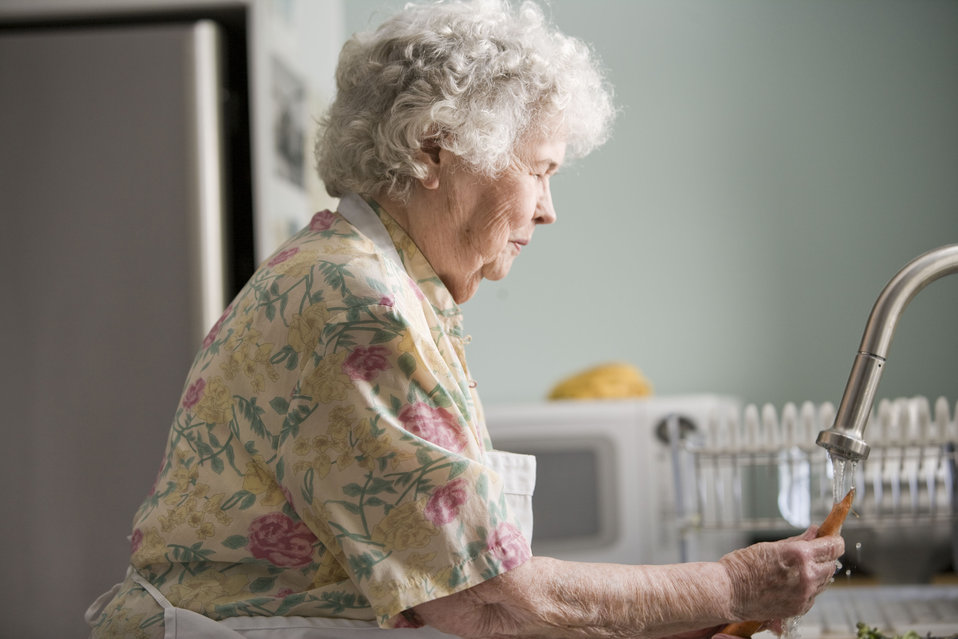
Properly cleaning fresh, uncooked produce is a must when preparing a meal, and with this in mind, the elderly woman pictured here was doing just that, as she was thoroughly cleaning a number of carrots and radishes. Note that there was soil still clinging to the tubers, which would have to be entirely removed using vigorous scrubbing with soapy warm water. Cleaning also will remove environmental pollutants, such pesticides from the foods' surfaces.